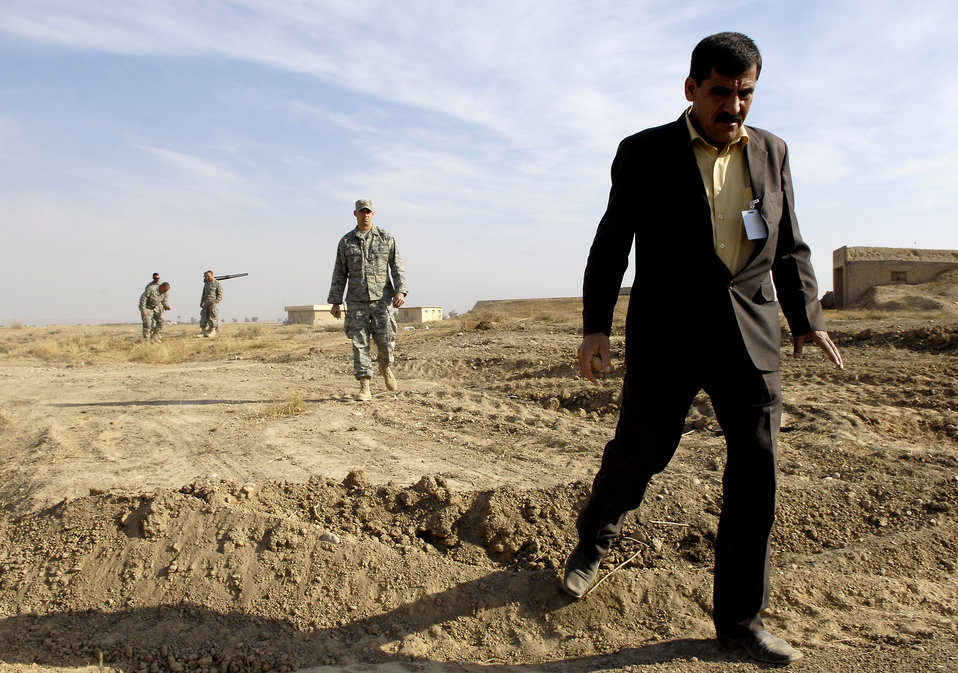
Deployed Airmen find ancient artifacts at Iraqi air base

S.M. Ameen and 2nd Lt. Brian Wernle look over one of four Kirkuk Air Base, Iraq, construction sites Dec. 26 where artifacts were found. The artifacts at this site were discovered by civil engineering Airmen while grading an area near the flightline. Mr. Ameen is a local Iraqi archeologist and the assistant curator at the Kirkuk Museum. Lieutenant Wernle is the base environmental engineer with the 506th Expeditionary Civil Engineer Squadron.